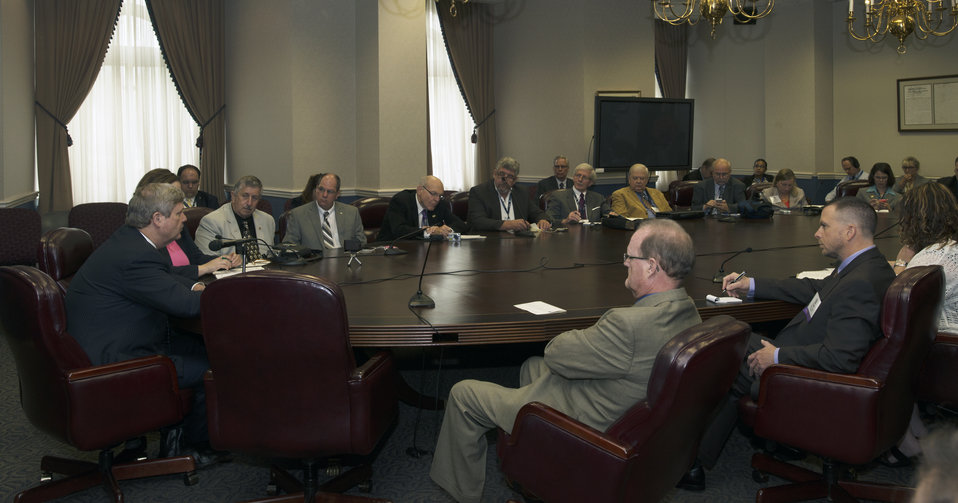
Agriculture Secretary Tom Vilsack meets with the National Association of Farm Broadcasters (NAFB) in the Williamsburg Room of the Whitten Building, U.S. Department of Agriculture (USDA) in Washington, D.C. on Tuesday, May 6, 2014.